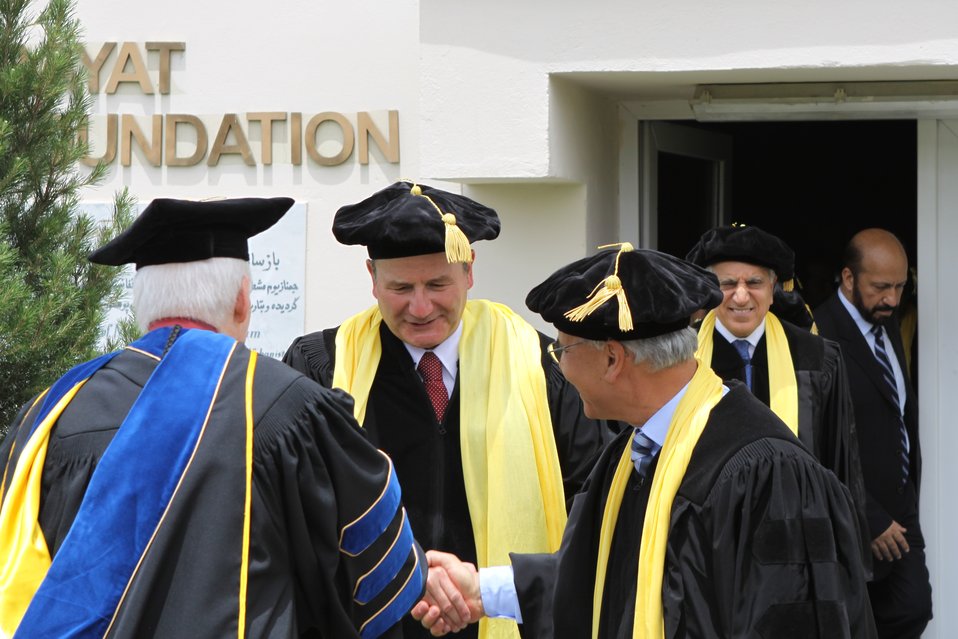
100526 AUAF Graduation 322